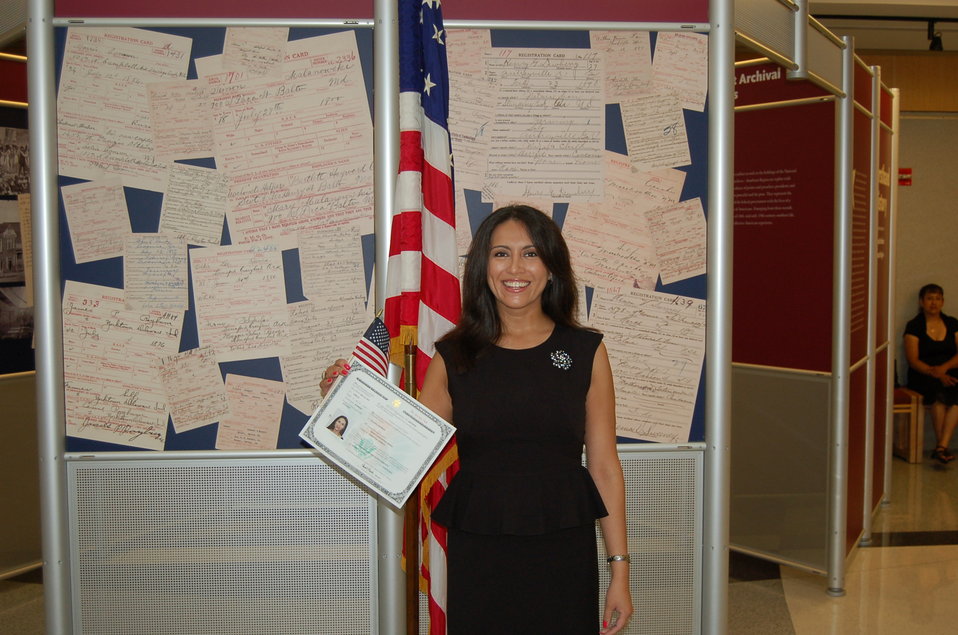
New Citizens